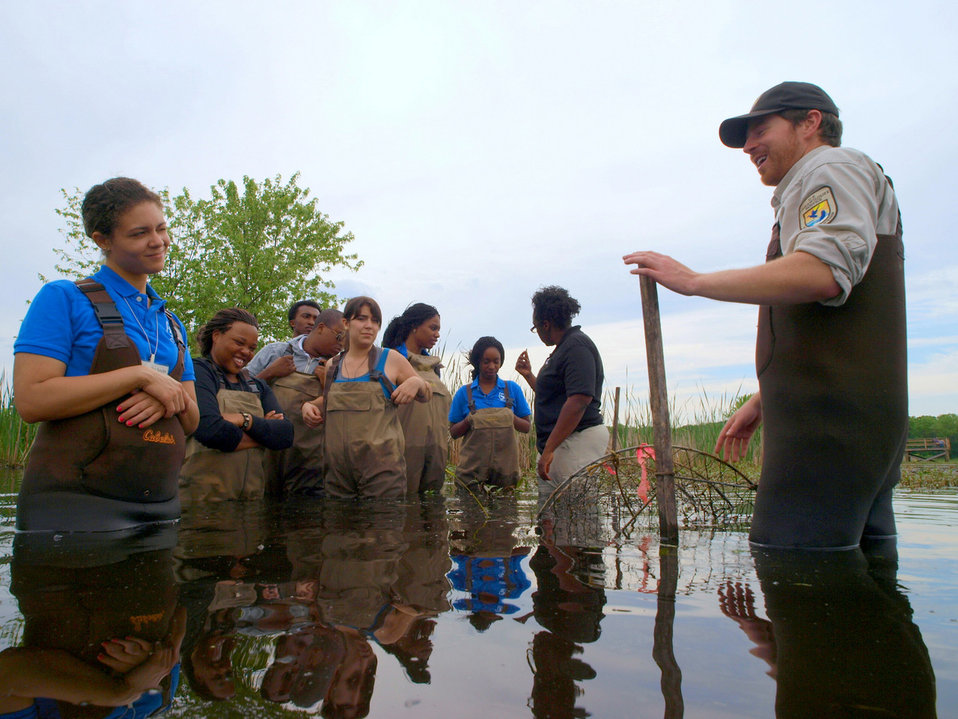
Turtle trapping at Great Meadows National Wildlife Refuge.